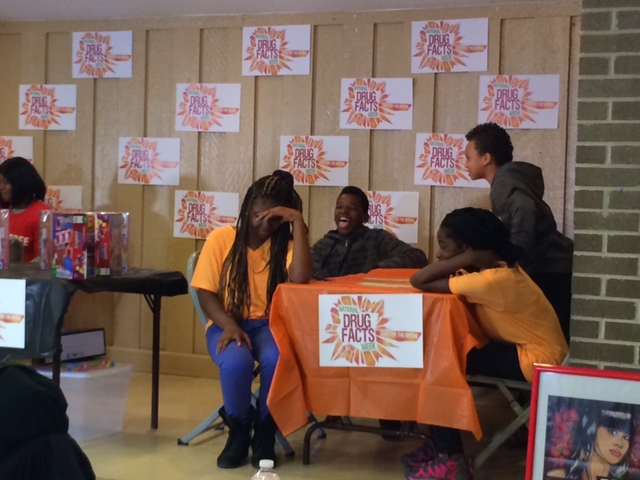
Florida Teens are Shattering the Myths

Teens from Orlando, Florida are 'Shattering the Myths' during the 2014 National Drug Facts Week at Orlo Vista Park.